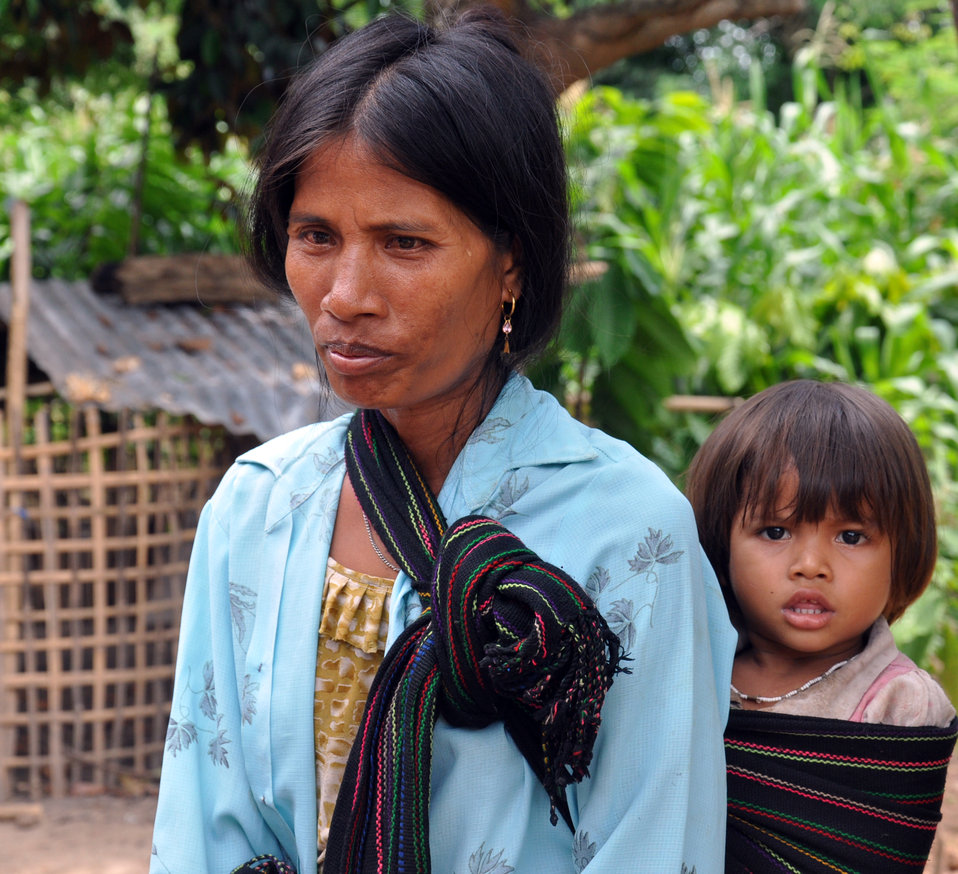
USAID supports cocoa farmer families in Dak Lak, Vietnam